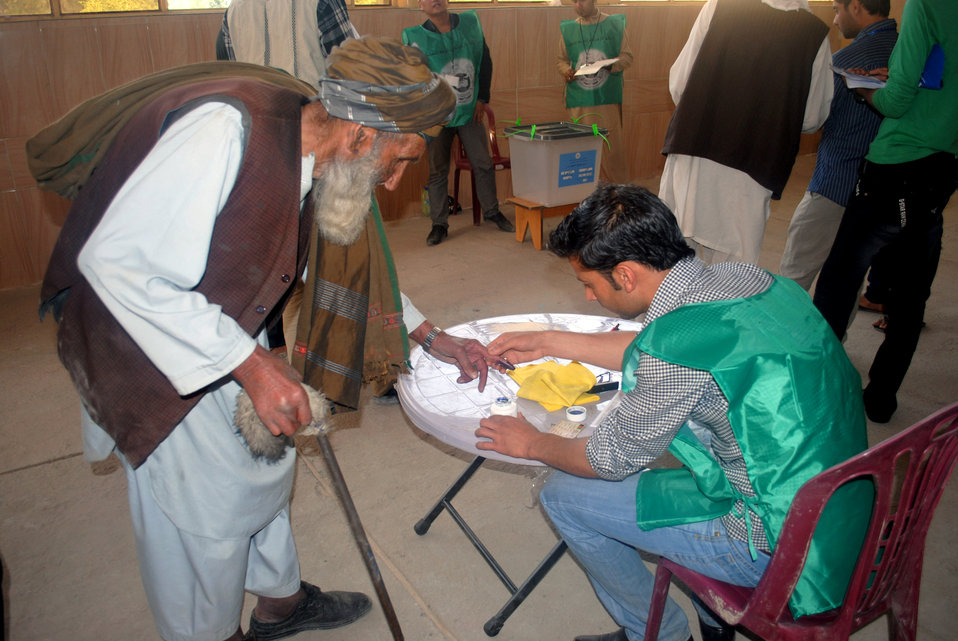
An elderly man casts his vote in a voting center in ninth police district in Kabul.